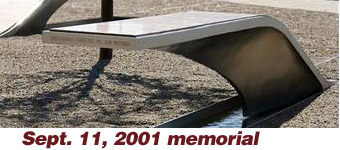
Pentagon Memorial

The memorial for the Sept. 11, 2001, attack on the Pentagon unveiled Sept. 11, 2008.